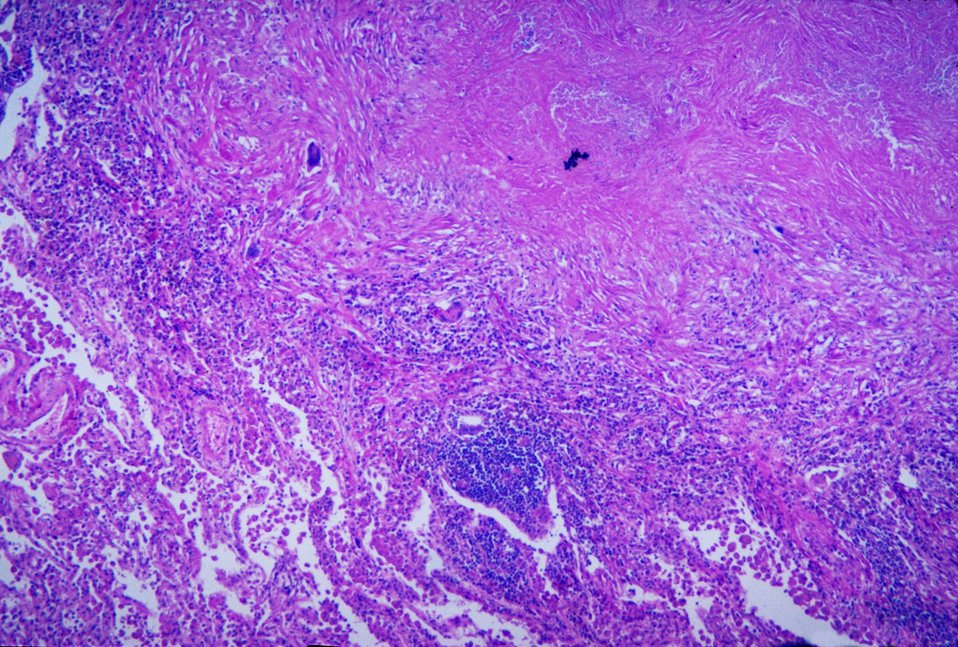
This micrograph depicts histopathologic changes due to cryptococcosis of the lung revealing a large fibrocaseous nodule.